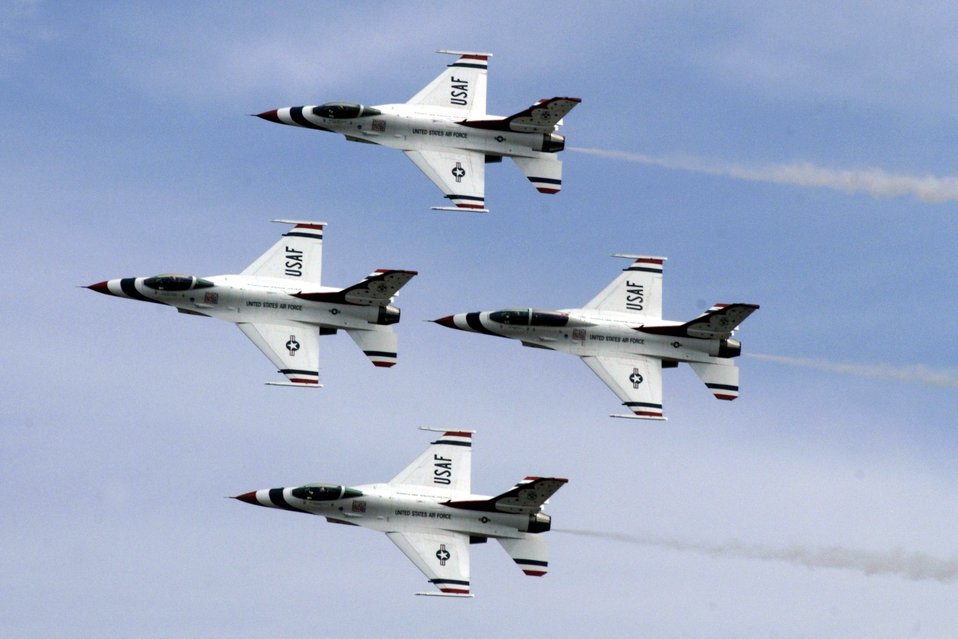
California Air Force Week

U.S. Air Force Thunderbirds perform at the California Capital Air Show in Sacramento, Calif., on Jun. 9. The air show was the last event of Air Force Week California. The purpose of Air Force Week is to inform and educate the American public about the importance and roles of the Air Force in America's national defense. Over 50,000 people attended the air show featuring the Air Force Thunderbirds and numerous Air Force aircraft.